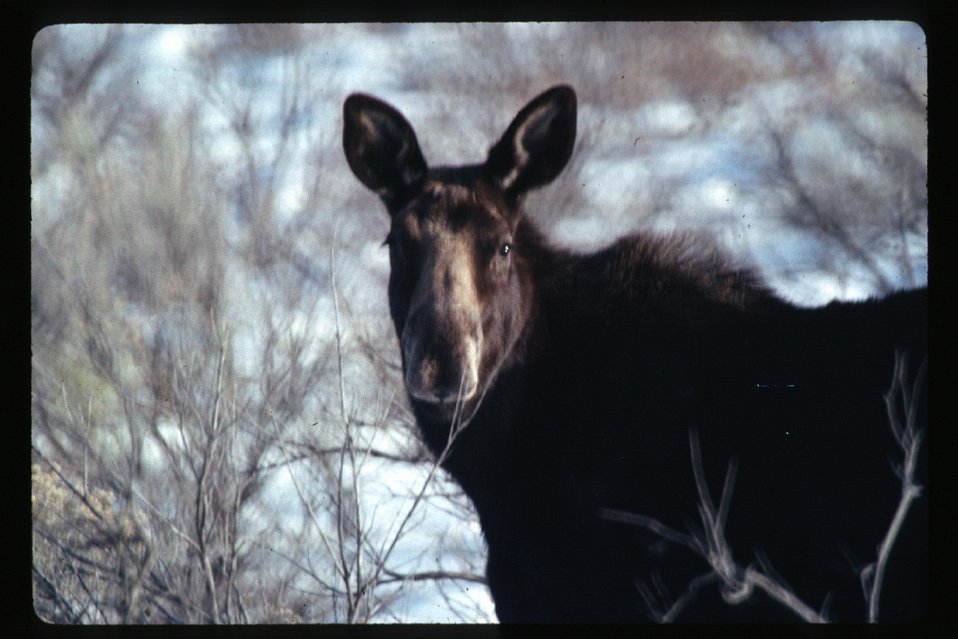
Moose Wildlife USRD Upper Snake River District